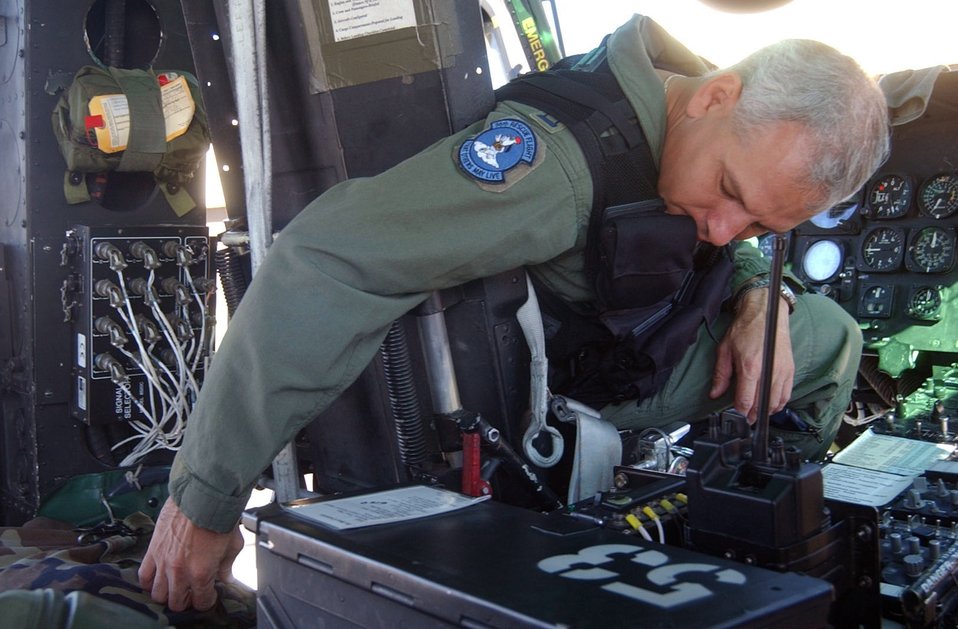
Airmen make two saves in one day

FAIRCHILD AIR FORCE BASE, Wash. -- Capt. Tom Higgins IV was the co-pilot on two separate rescue missions July 17. The 36th Rescue Flight was notified by the Air Force Rescue Coordination center that two people were injured and needed assistance in the mountains above Leavenworth, Wash.